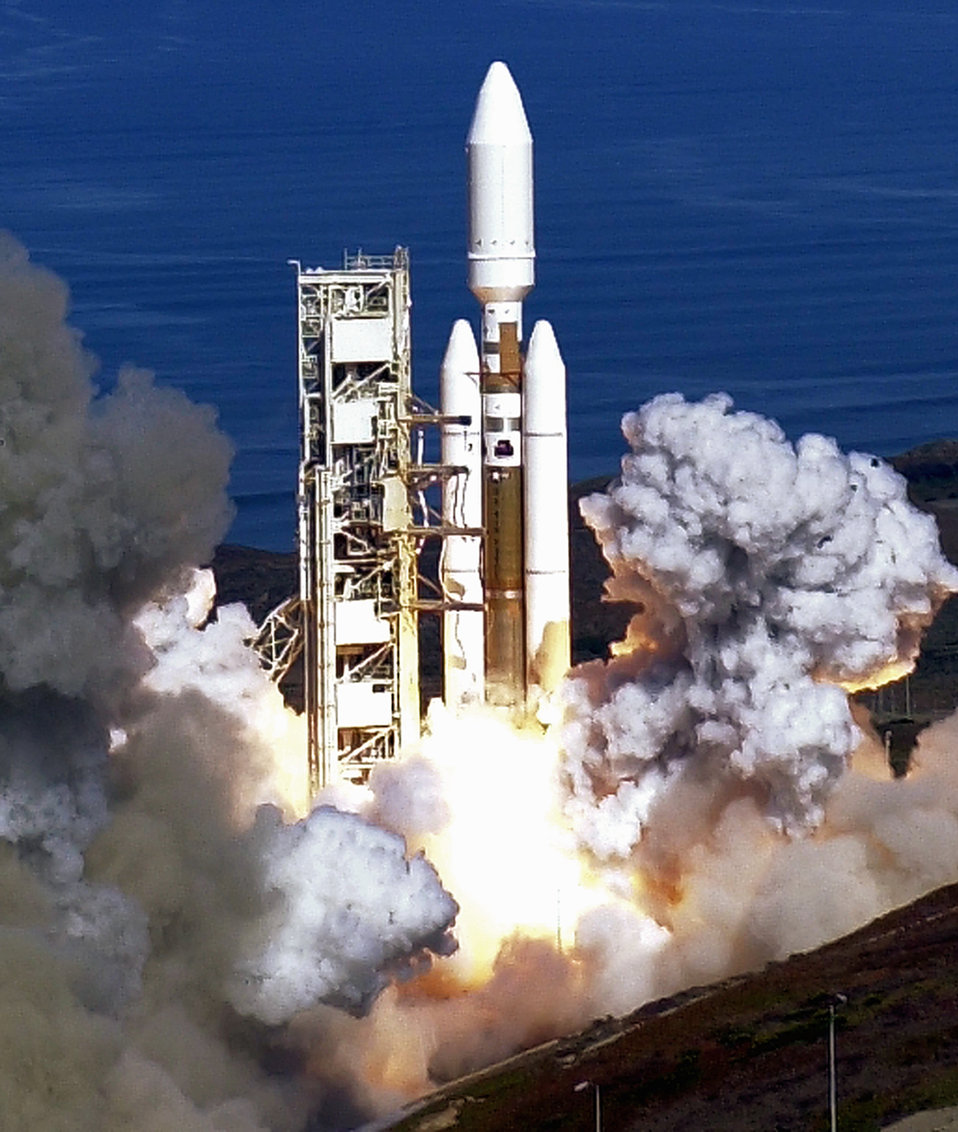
Titan launch

VANDENBERG AIR FORCE BASE, Calif. -- A Titian IV Centaur rocket launches here Oct. 19. The rocket is the largest unmanned space booster used by the Air Force. The vehicle carries payloads equivalent to the size and weight of those carried on the space shuttle.